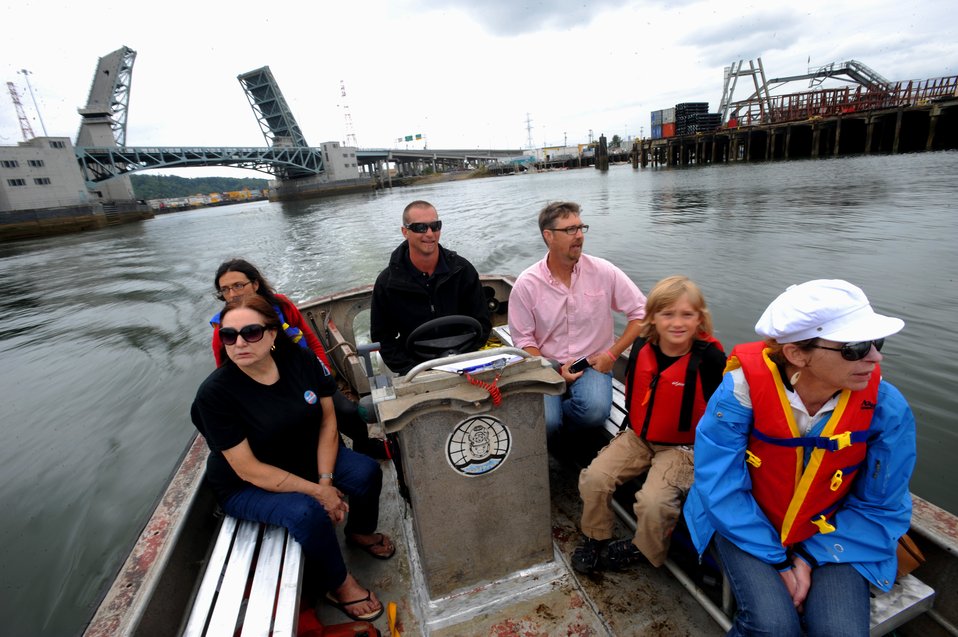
Duwamish Water Taxi

Festival-goers take a guided tour of the Duwamish River on a water taxi as part of the 5th Annual Duwamish River Festival. The group got a first hand look at the challenges facing cleanup and restoration efforts. Visit www.epa.gov/region10/duwamish to learn more about EPA's efforts to clean up and restore the lower Duwamish River.